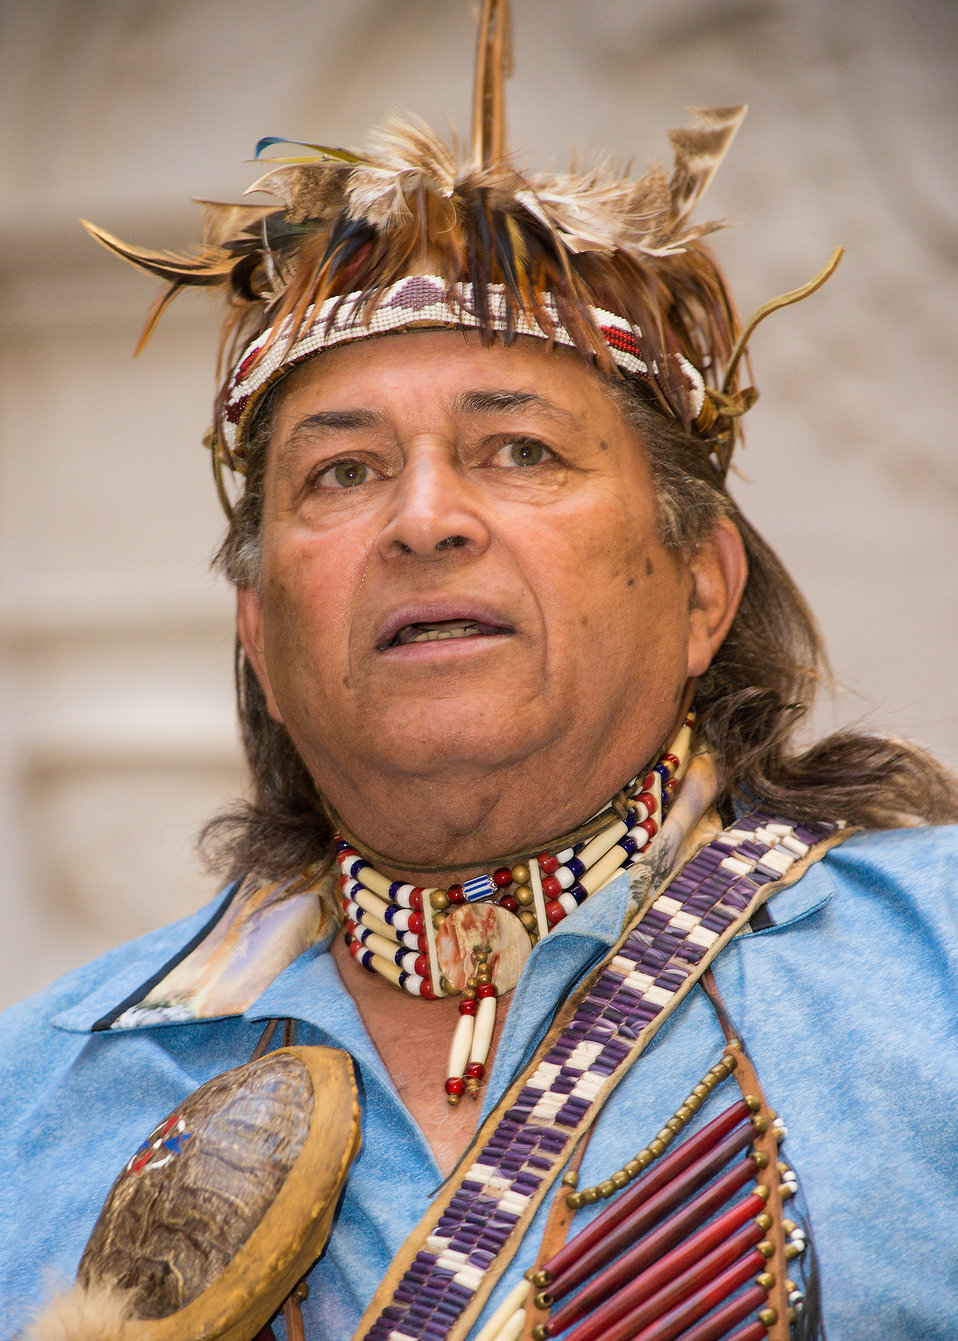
Cheroenhaka Nottoway Indian Tribe Chief Walter D. “Red Hawk” Brown III presents a history of the First American Tribes of Virginia at the 2013 American Indian and Alaska Native Heritage Observance at the U.S. Department of Agriculture (USDA), on Thursday, Nov. 14, 2013 in Washington, D.C. The theme of this year’s event was “Guiding Our Destiny with Heritage and Traditions.”